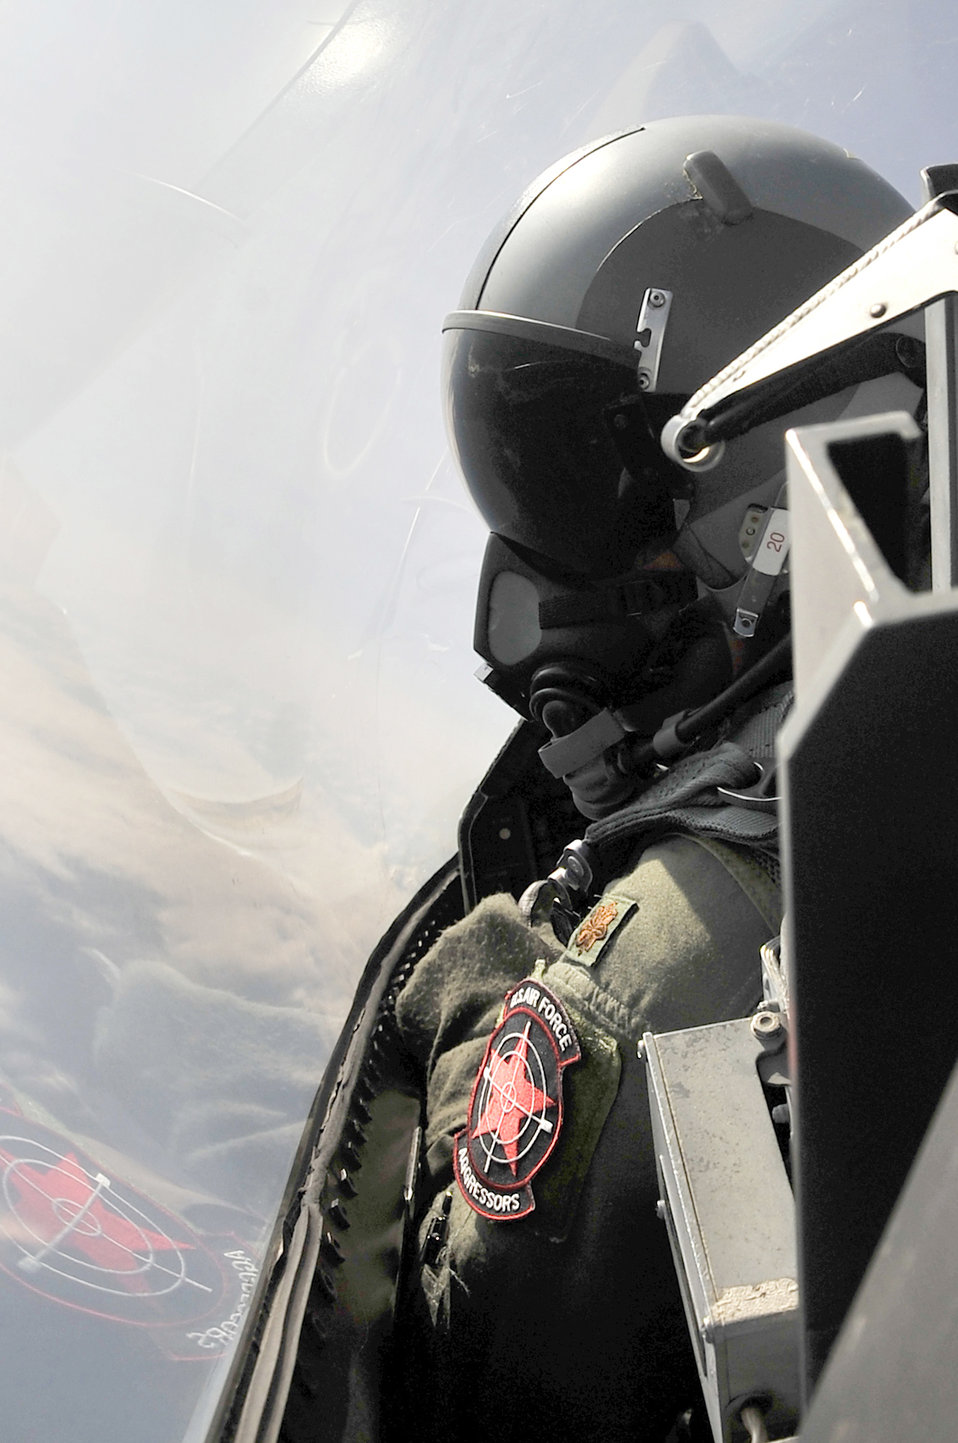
Lookin' for the good guys

Maj. Todd Hale flies his F-16 Fighting Falcon over the Joint Pacific Alaska Range Complex June 25 during Northern Edge 2009. NE-09 aircrews practice tactics, techniques and procedures associated with defensive counter-air, close-air support, and personnel-recovery missions.